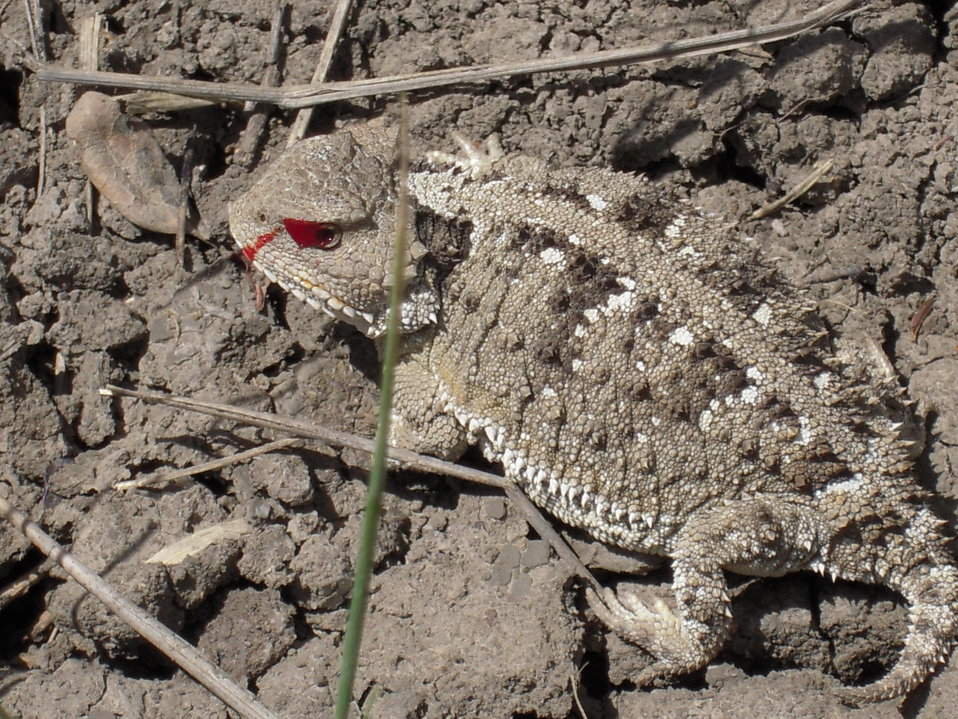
Short-horned Lizard

Some species of short-horned lizards squirt blood from their eyes when they feel threatened. These lizards are widely distributed in eastern Montana.